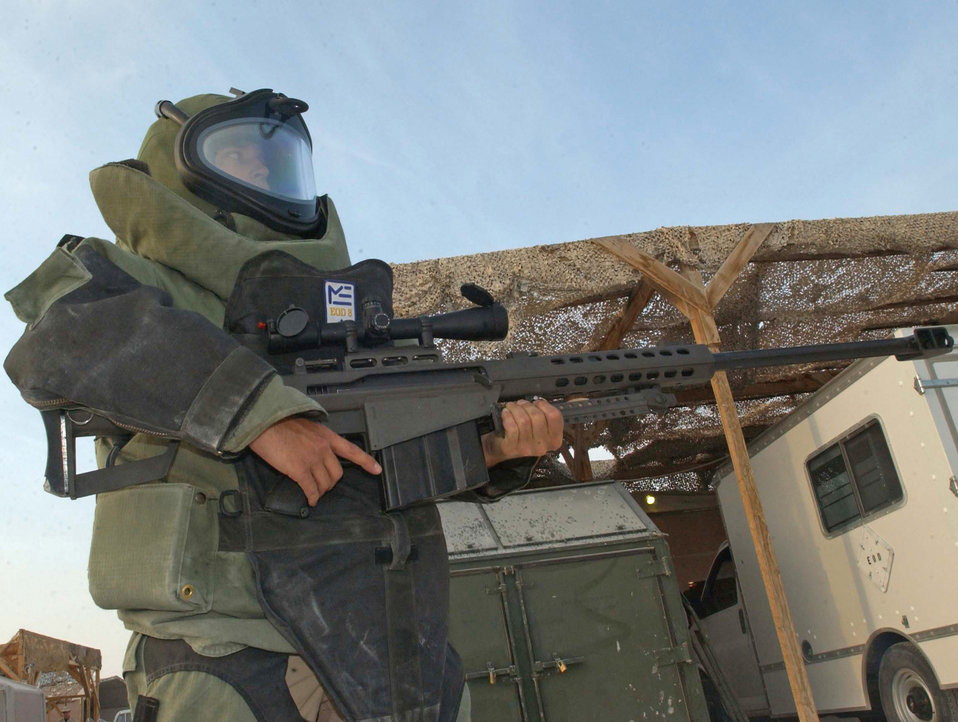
Armed and ready

OPERATION ENDURING FREEDOM -- Senior Airman Nathan V. Jones guards his position with a .50 caliber weapon during required training at a forward-deployed location Jan. 5. Airman Jones is an explosive ordnance disposal technician with the 379th Expeditionary Civil Engineer Squadron.